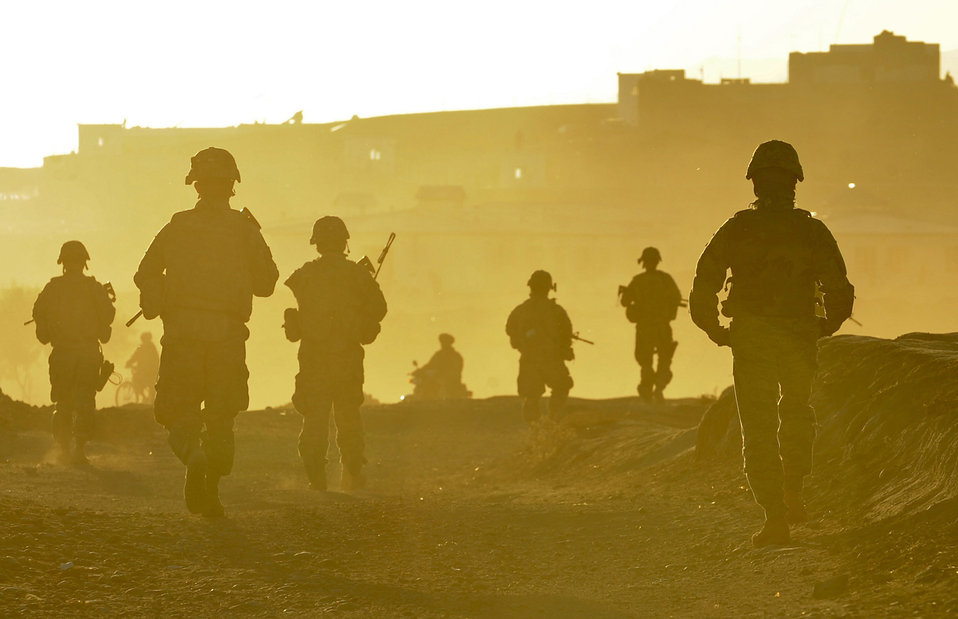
A long day is done...

Soldiers and Airmen return to base after a patrol Nov. 1, 2010, near the city of Qalat, Afghanistan, in the Zabul Province. They are part of the Provincial Reconstruction Team Zabul.